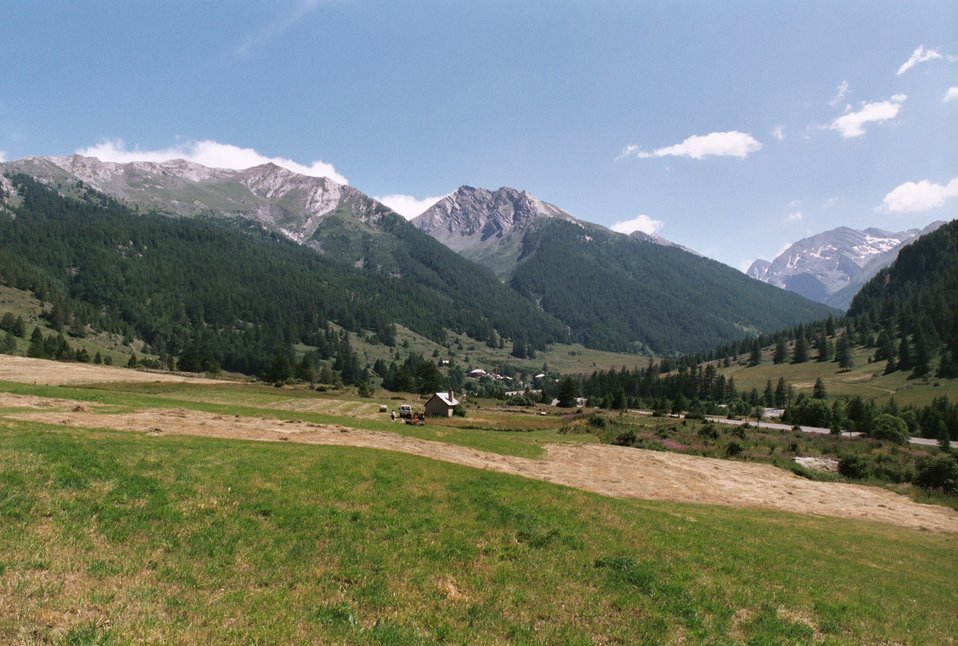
L'Echalp (depuis La Monta)